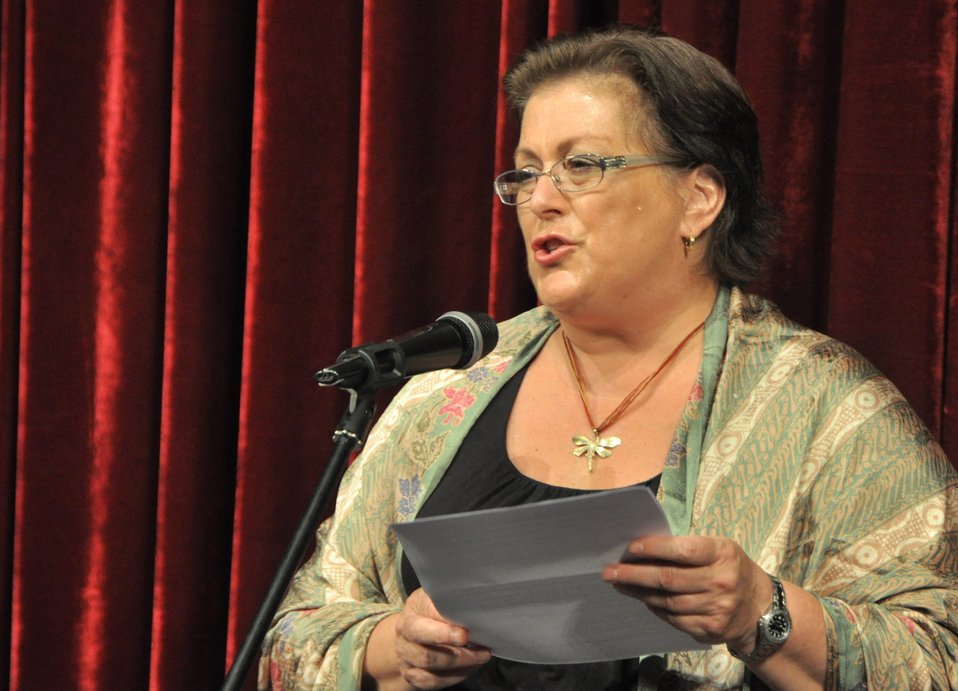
PEPFAR Musical Questions and Exclamations

U.S. Embassy Deputy Chief of Mission Claire Pierangelo speaks at the musical in Hanoi on May 17, 2013.